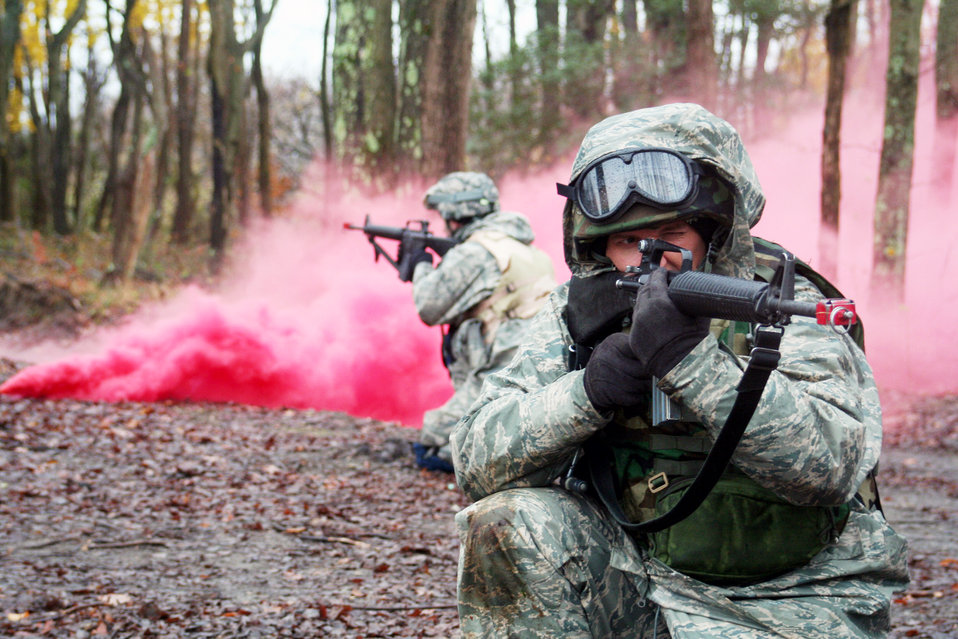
Deploying Airmen practice patrol tactics

Students in the Combat Airman Skills Training Course use a smoke diversion tactic Nov. 12, 2009, on a range at Joint Base McGuire-Dix-Lakehurst, N.J.